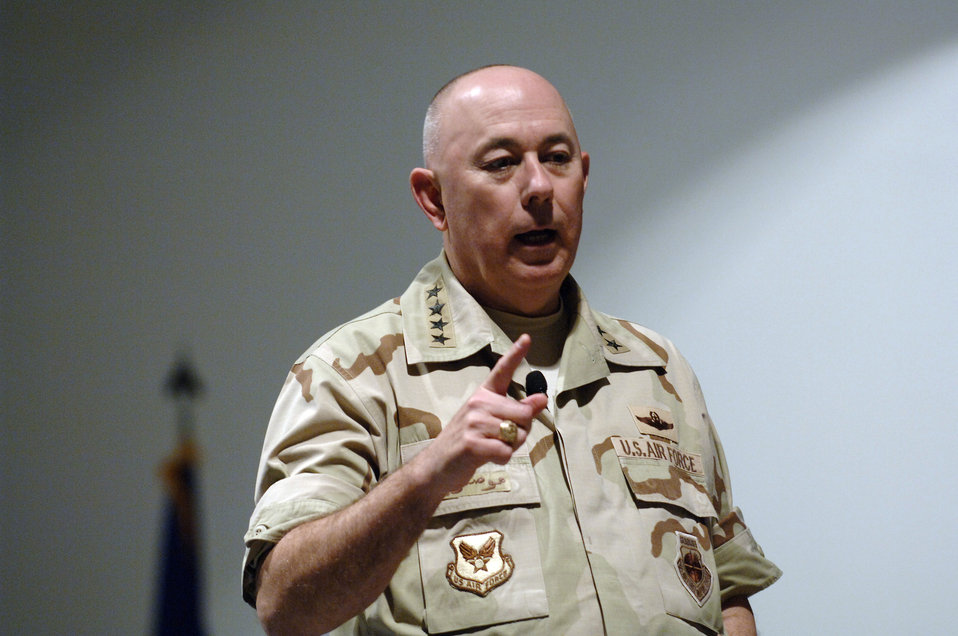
Warrior Airmen new culture of Air Force

Gen. T. Michael Moseley speaks to Airmen Feb. 5 in Southwest Asia. General Moseley, the Air Force chief of staff, spoke to at the 379th Air Expeditionary Wing Airmen about changes in the Air Force that will be implemented in upcoming months and how Airmen are warfighters today.